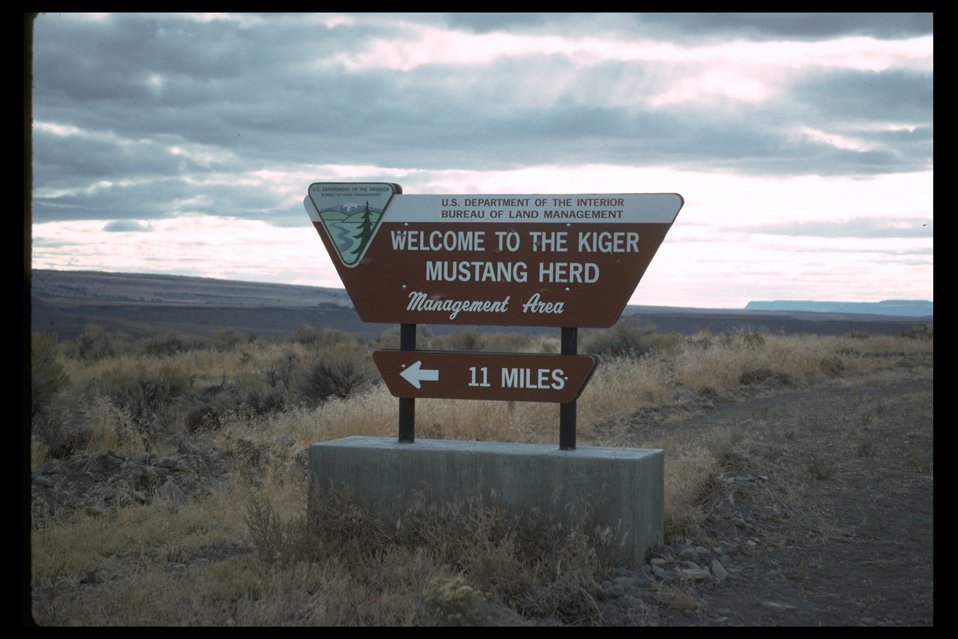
Kiger Mustang viewing area sign.